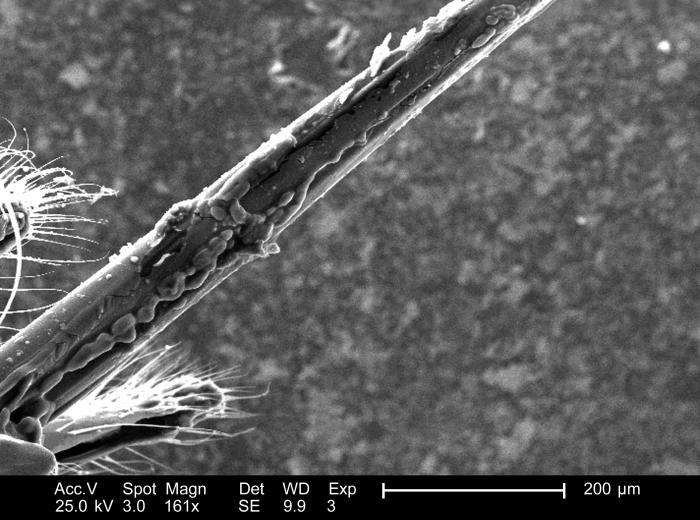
Under a low magnification of 161x, and a lateral perspective, this scanning electron micrograph (SEM) depicted some of the ultrastructural morphologic details around the proximal region of the stinger apparatus of an unidentified hymenopteran insect found deceased in the Decatur, Georgia suburbs. The Order of Hymenoptera includes bees, wasps, ants, and sawflies. Judging from the smooth nature of this stinger shaft, this was probably something other than a honeybee, whose stinger shaft would have displayed more defined, broader barbs at the distal tip. The smoother nature of the shaft, would have allowed the stinger to have been easily extracted without it becoming inextricably embedded when it was penetrating a victim's skin, as is the case with the Western honeybee, Apis mellifera.